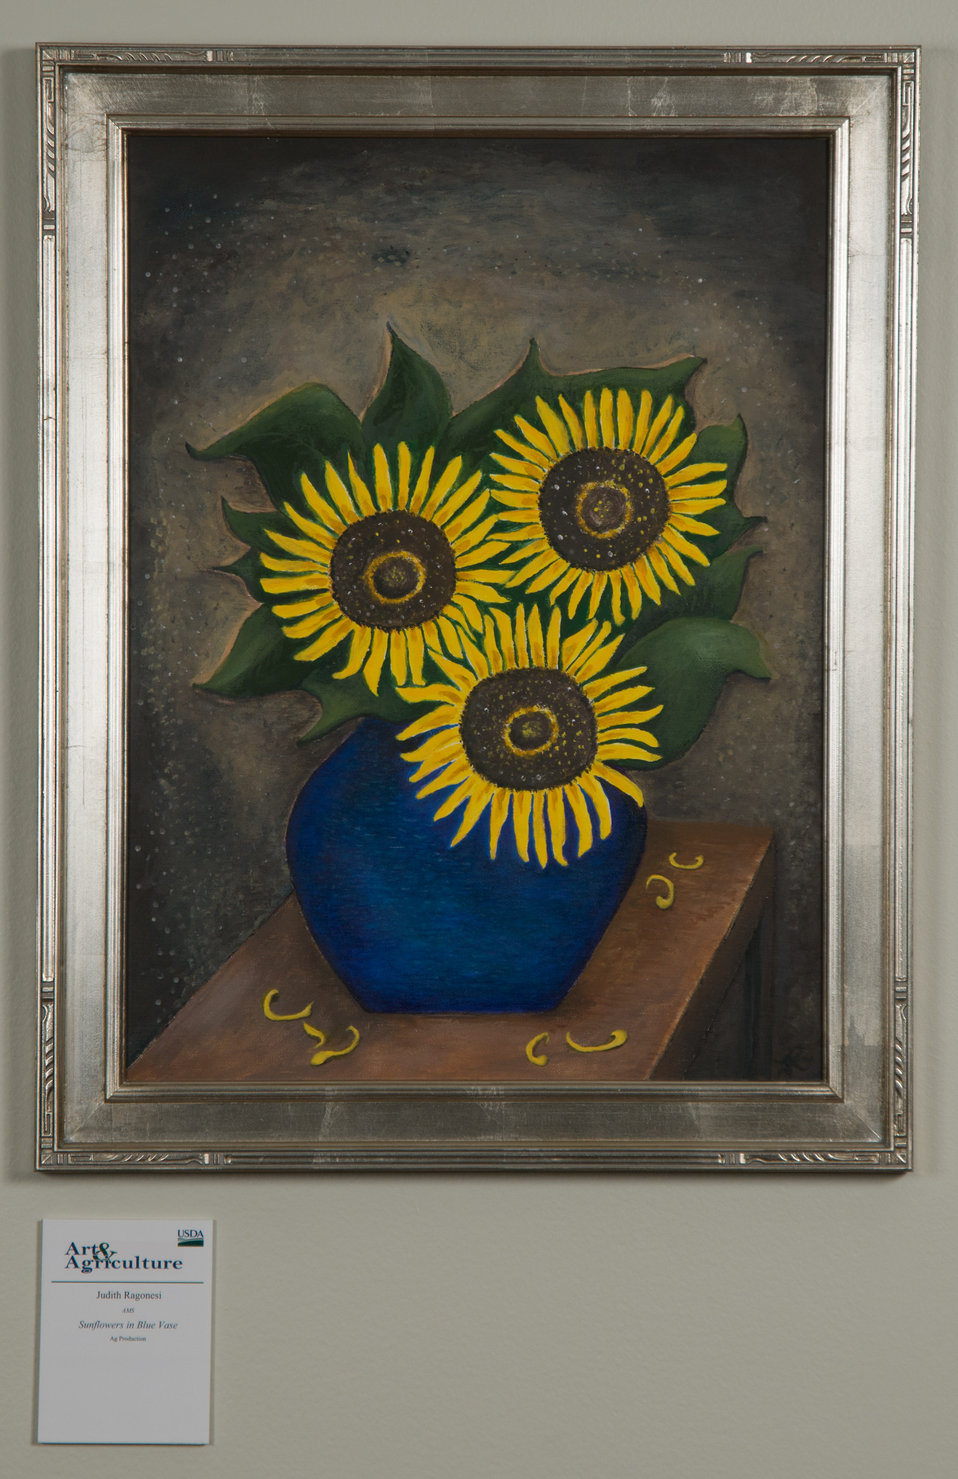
Online Viewer's Choice entries of the 2013 Art & Agriculture, Tuesday, July 9, 2013, in the South Building, Washington, D.C. Themes were expressed by employees from across the department and the contest was open to full-time and part-time USDA employees. Winning artwork will be displayed till the end of the year. U.S. Artistic expression is a creative outlet that is vital for an individual to grow and develop.